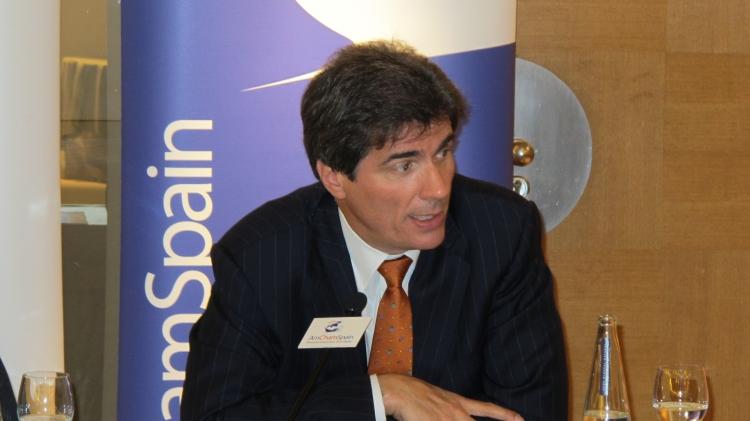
Assistant Secretary Fernandez Address the American Chamber of Commerce in Madrid

Assistant Secretary of State for Economic, Energy and Business Affairs Jose W. Fernandez addresses the American Chamber of Commerce in Madrid, Spain, on September 29, 2011.